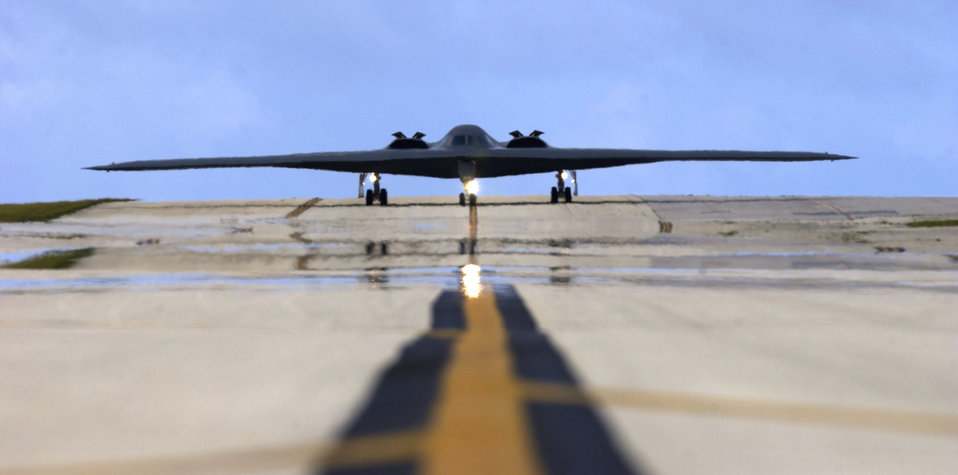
Spirit of protection

A B-2 Spirit taxis down the flightline April 25 at Andersen Air Force Base, Guam. B-2 Spirits and 270 Airmen from the 393rd Expeditionary Bomb Squadron at Whiteman AFB, Mo., are at Andersen as part of Pacific Command's continuous bomber presence in the Asia-Pacific region.